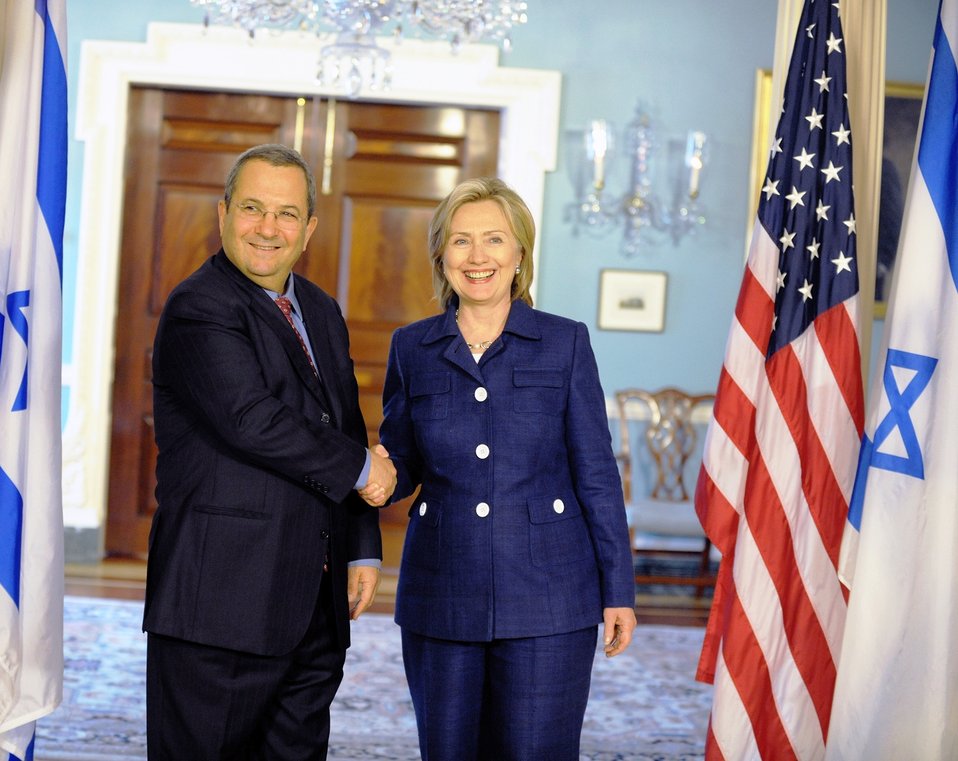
Secretary Clinton Holds Bilateral With Israeli Defense Minister Barak

U.S. Secretary of State Hillary Rodham Clinton holds a bilateral meeting with Israeli Defense Minister Ehud Barak at the U.S. Department of State in Washington, D.C., on June 23, 2010.